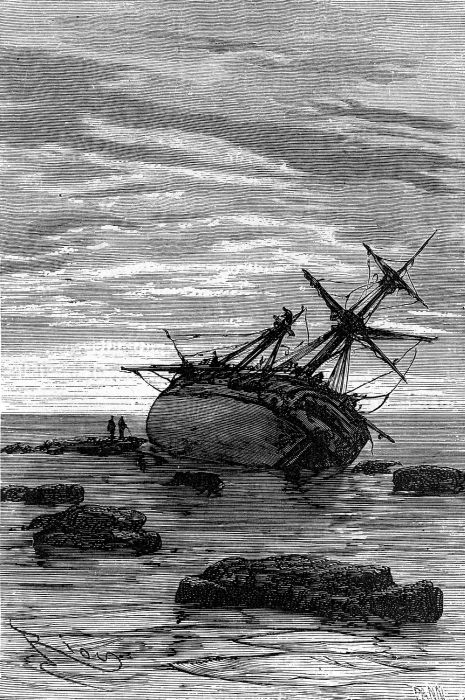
'The Children of Captain Grant' by Édouard Riou 137